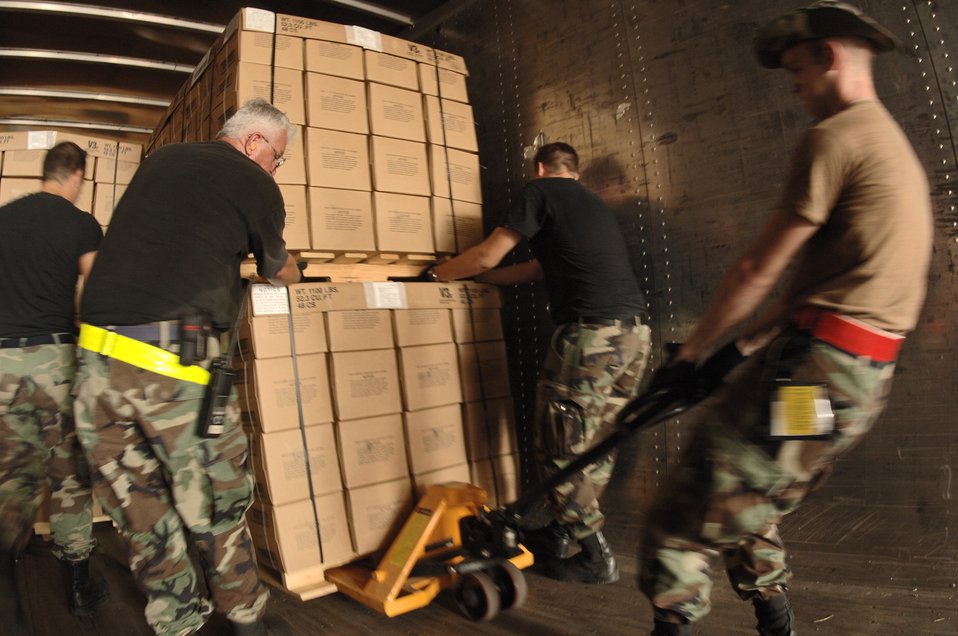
Meals Ready to Eat

ELLINGTON FIELD, Texas - Master Sgt. Paul Kosharek (yellow belt), shows Senior Airmen Palmer Eden, Dennis Horning and Justin Streitberger how to use a pallet jack Sept. 25 to move pallet of meals ready to eat. The supplies were designated for the Hurricane Rita relief effort. The Airmen are assigned to the 136th Aerial Port Squadron from Naval Air Station-Joint Reserve Base Fort Worth, Texas.